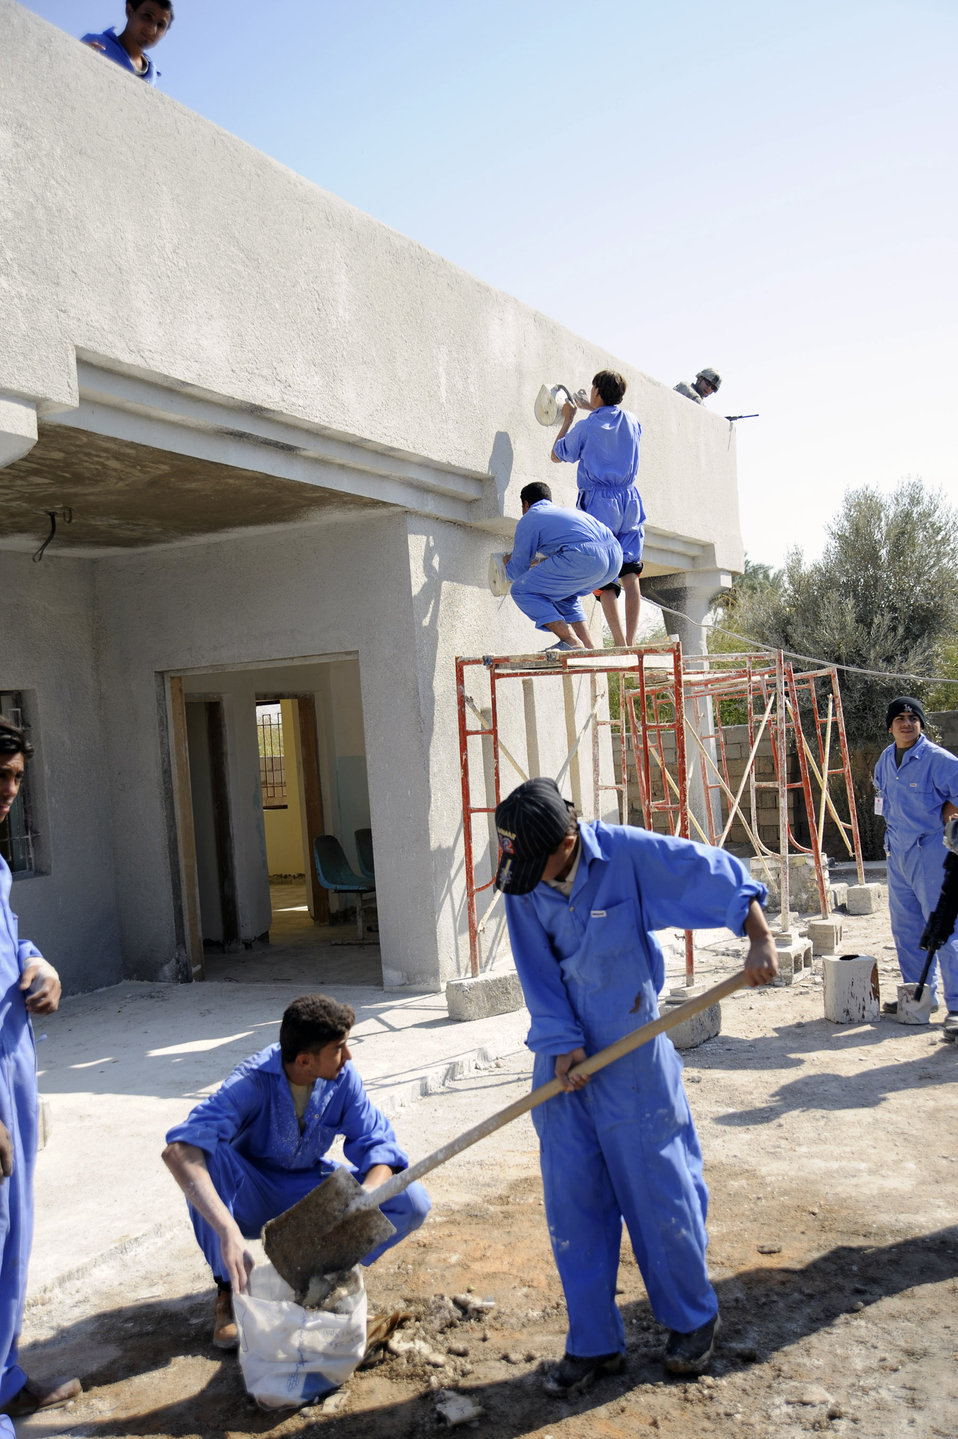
RED HORSE Airmen close chapter with Iraqis

Iraqi Village of Hope workers rebuild a battle damaged home in Hawr Rajab, Iraq. The Village of Hope program taught trade skills to local citizens and helped rebuild a boy's school, community center and homes that were battle damage by al-Qaida.